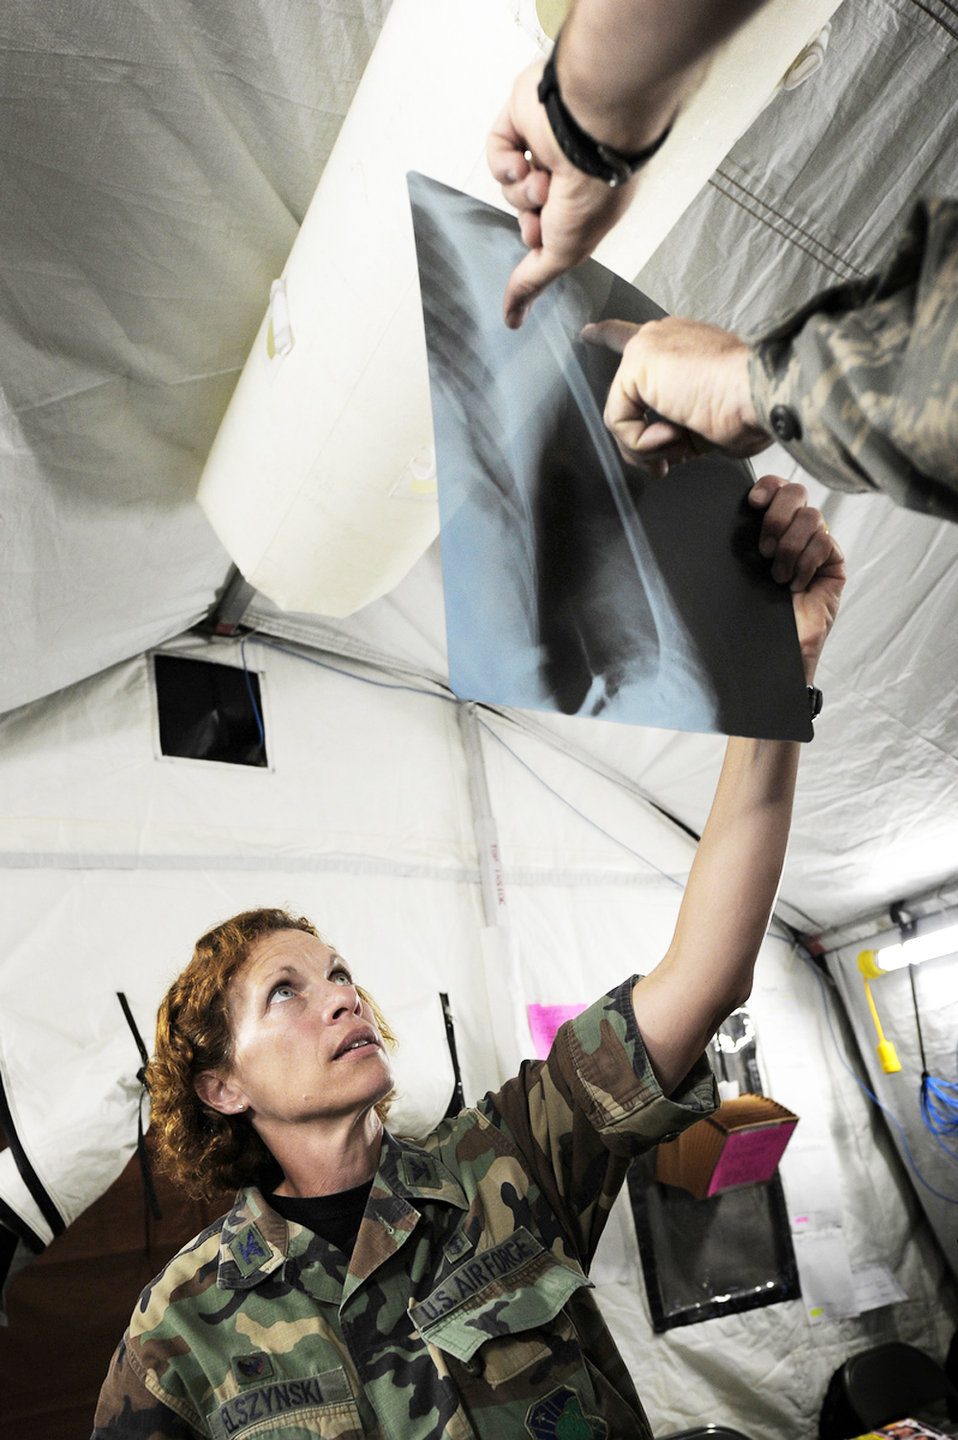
Airmen provide care, compassion to people of Haiti

An Airman from Travis Air Force Base, Calif., looks at an X-ray as she treats earthquake survivors at an expeditionary medical facility Feb. 3, 2010, located along the harbor of Port-au-Prince, Haiti. A 7.0-magnatude earthquake struck Haiti Jan. 12, leaving thousands of Haitians displaced and without access to food, water and vital medical care.